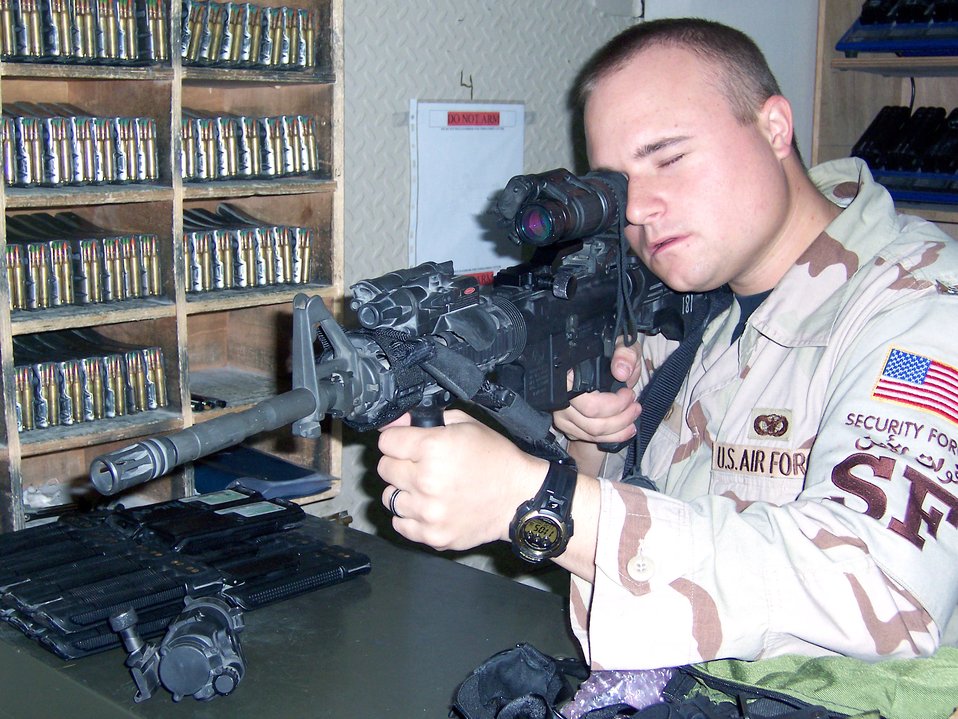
Section keeps security forces equipped, rolling

Senior Airman Creg Kinkead tests a pair of night-vision goggles, using a kit to mount it on an M4. The